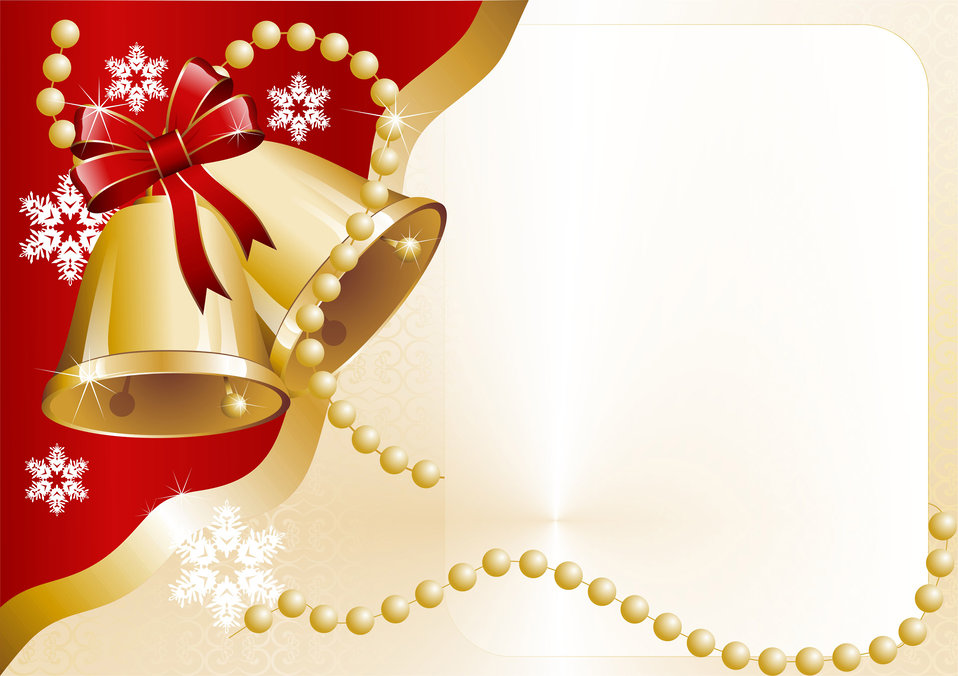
Christmas cards

Finished cards for christmas and new year with golden bells..